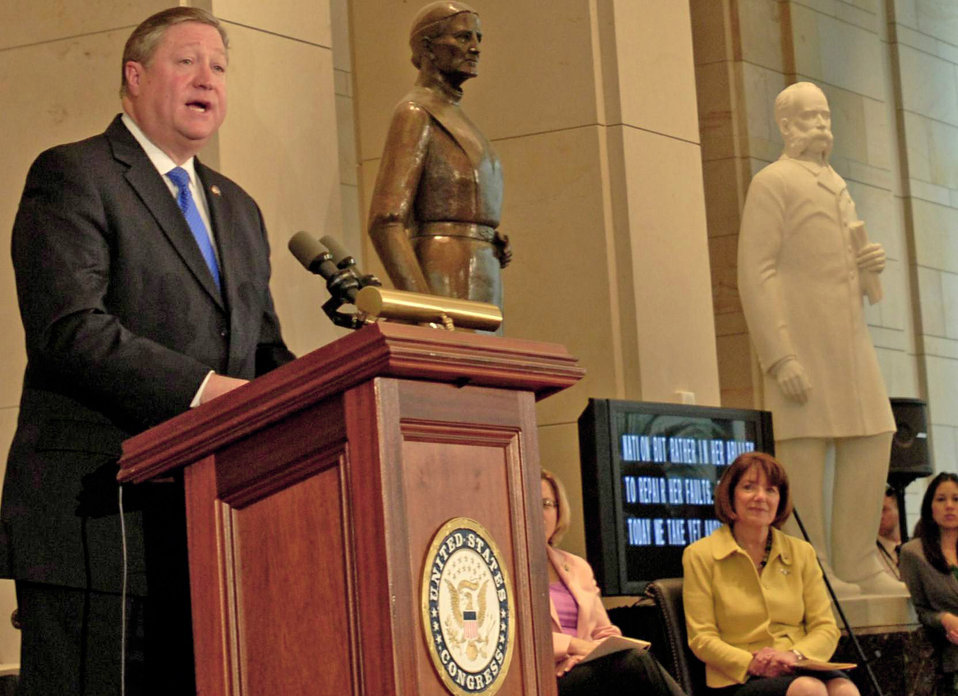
WASPs awarded Congressional Gold Medal

Secretary of the Air Force Michael Donley speaks during a ceremony to award World War II Women Airforce Service Pilots the Congressional Gold Medal at the Capitol March 10, 2010. More than 200 WASPs attended the event, many of them wearing their World War II-era uniforms. The audience, which Speaker Nancy Pelosi noted was one of the largest ever in the Capitol and too large to fit into Emancipation Hall, also included their families, as well as the families of those who have since died or couldn't travel.